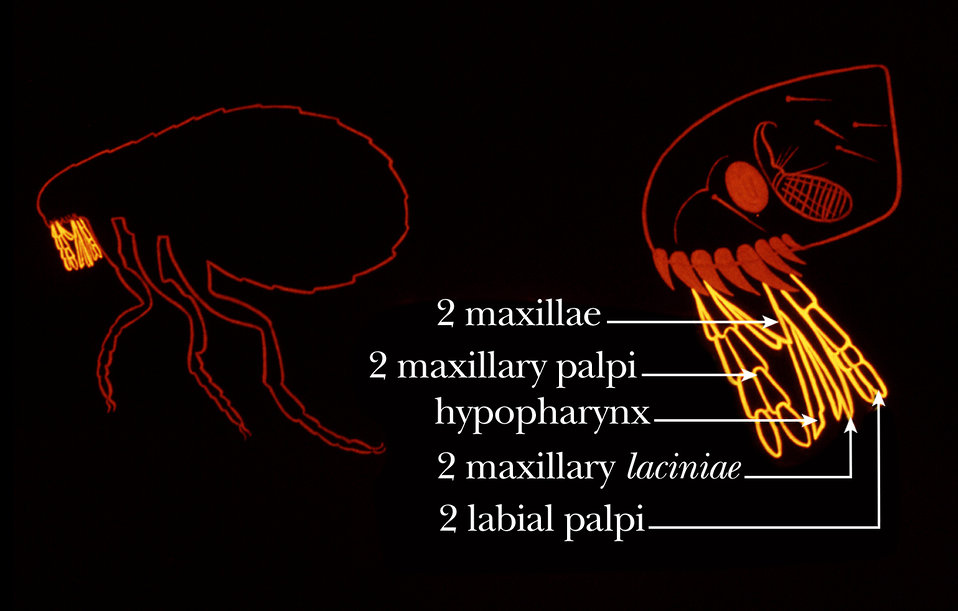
This illustration shows some of the morphologic characteristics on the head region of a flea used when identifying these insects.